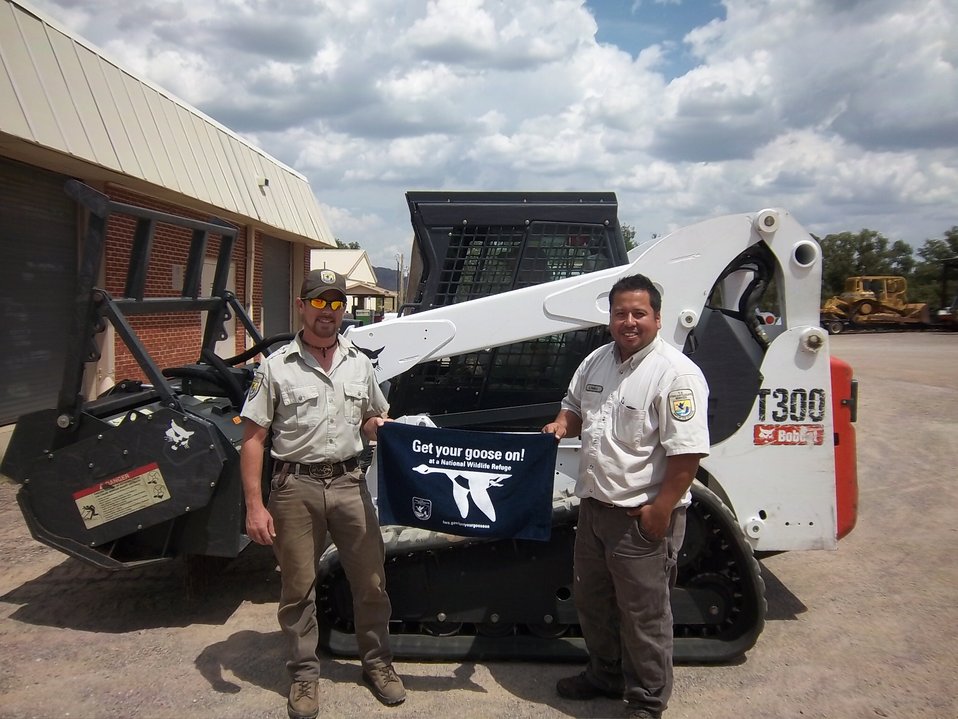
Get Your Goose On!

Wichita Mountains National Wildlife Refuge in Oklahoma.